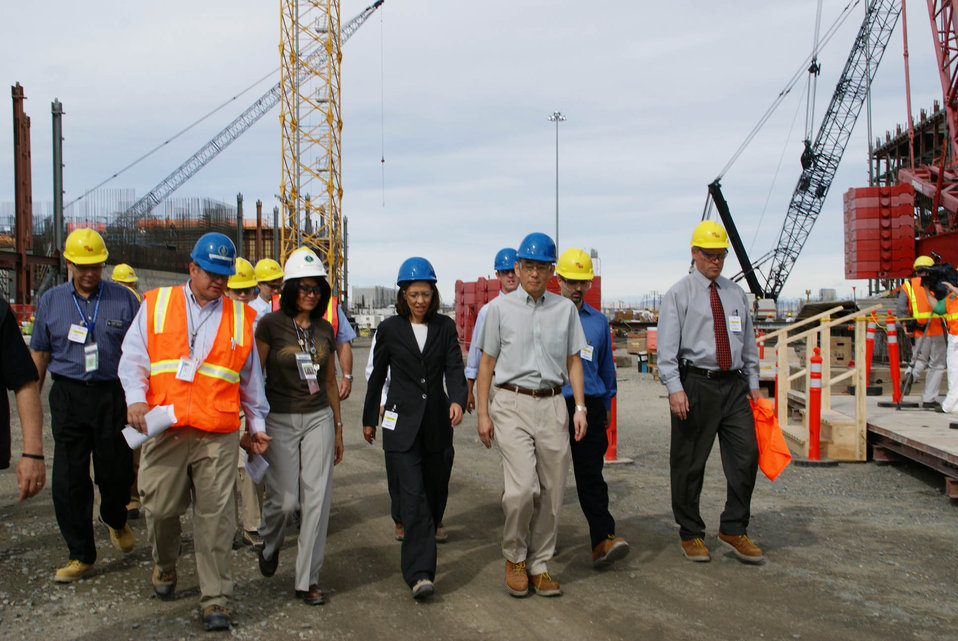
SECRETARY CHU VISIT TO VIT PLANT 2009

DOE Secretary Chu visits with Office of River Protection management at Hanford while touring the construction of the West Treatment Plant.